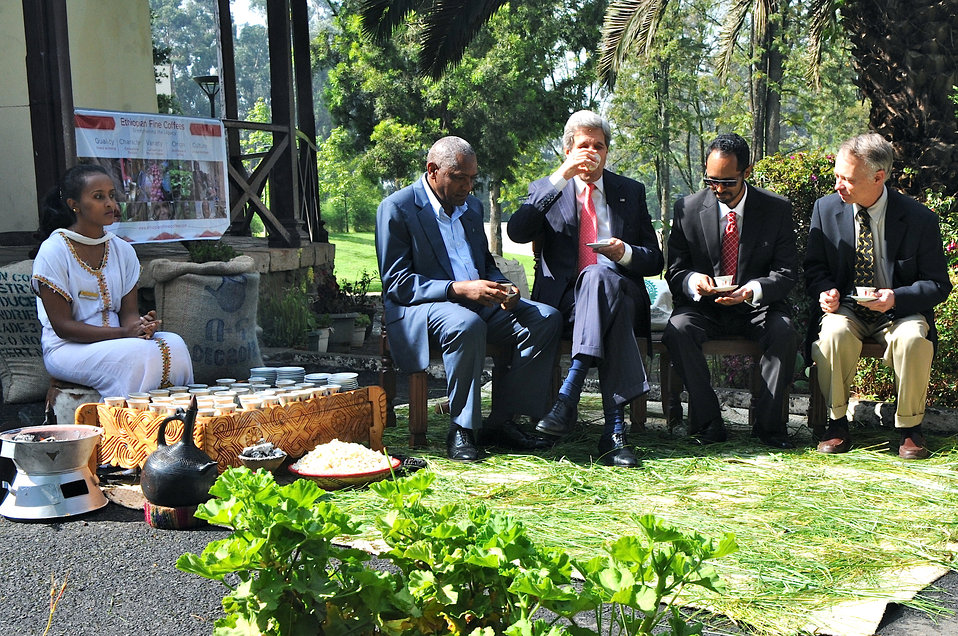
Secretary Kerry Participates in Traditional Ethiopian Coffee Ceremony

U.S. Secretary of State John Kerry sips from a cup during a traditional Ethiopian coffee ceremony upon his arrival at the U.S. Embassy in Addis Ababa, Ethiopia, on May 26, 2013.